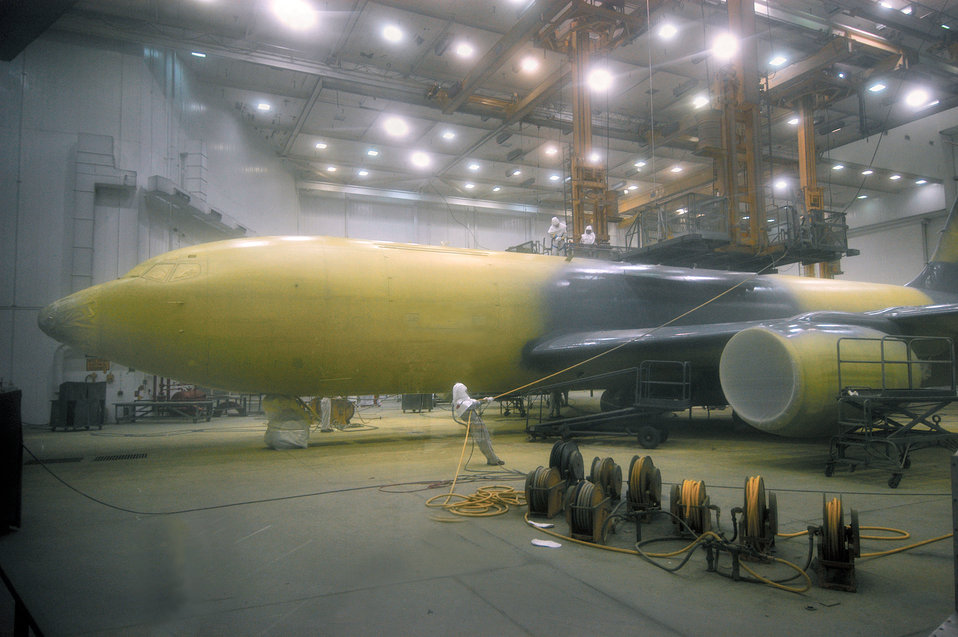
Painters produce picture-perfect planes

TINKER AIR FORCE BASE, Okla. -- Workers here put the first coat of paint on a KC-135 Stratotanker.